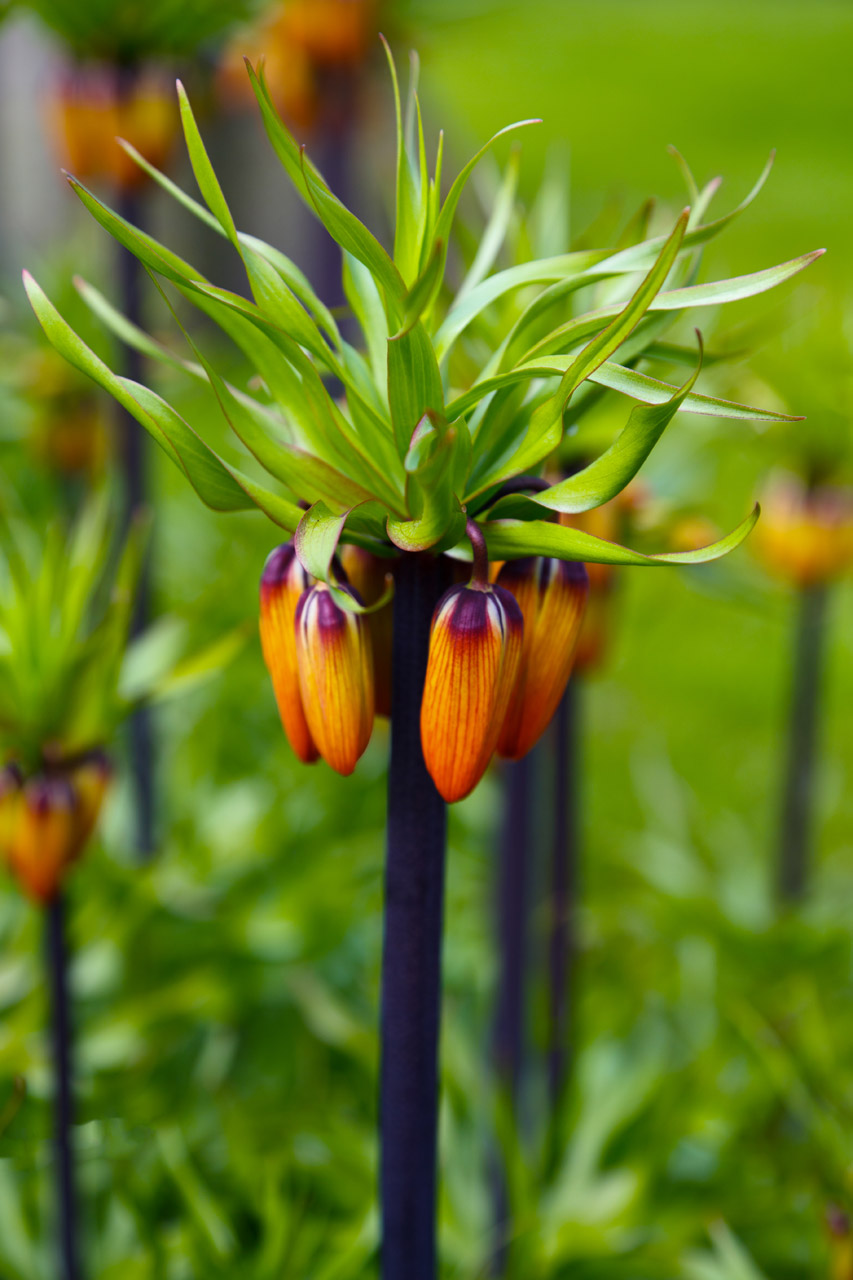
Orange crown imperial

An unusual orange flower.